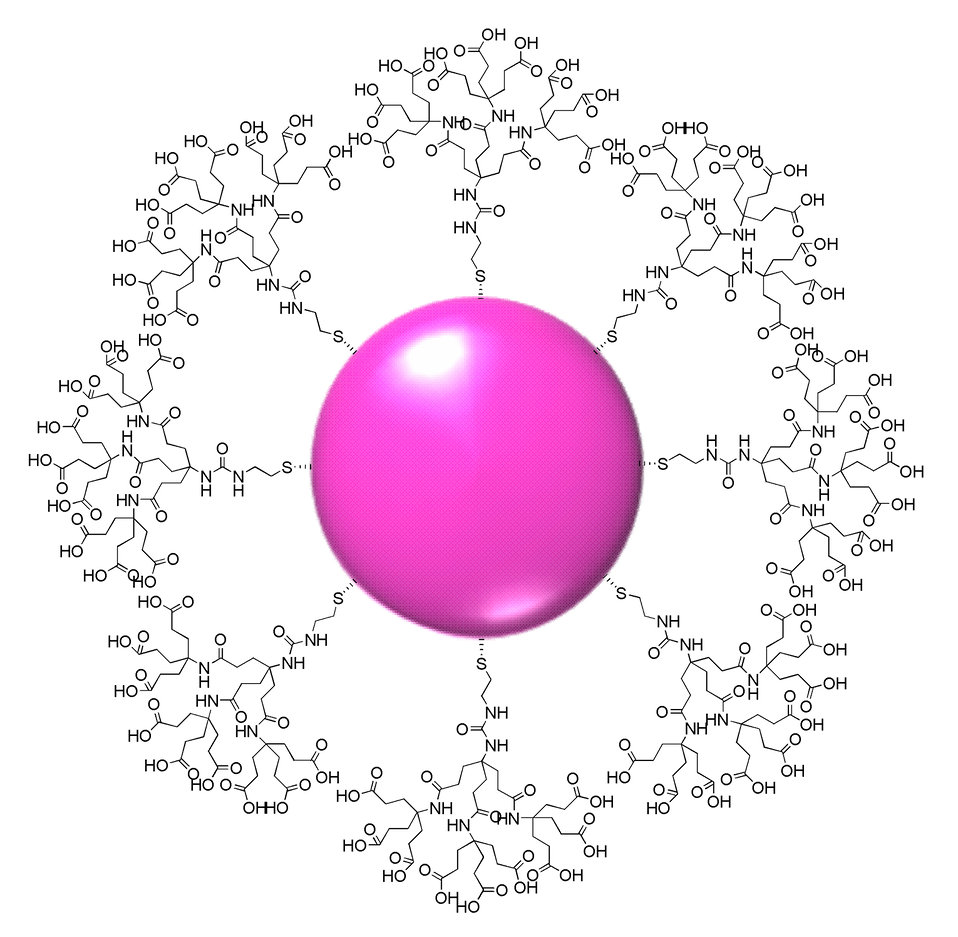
Nanoparticle; Gold

Sketch of a typical gold nanoparticle encased in dendrons. A single sulfur atom at the 'root' of each multiply branched dendron anchors it to the gold nanoparticle at the center. NIST and NCI/NCL researchers are studying the tiny constructs as a test bed and basic vehicle for many possible biomedical applications.